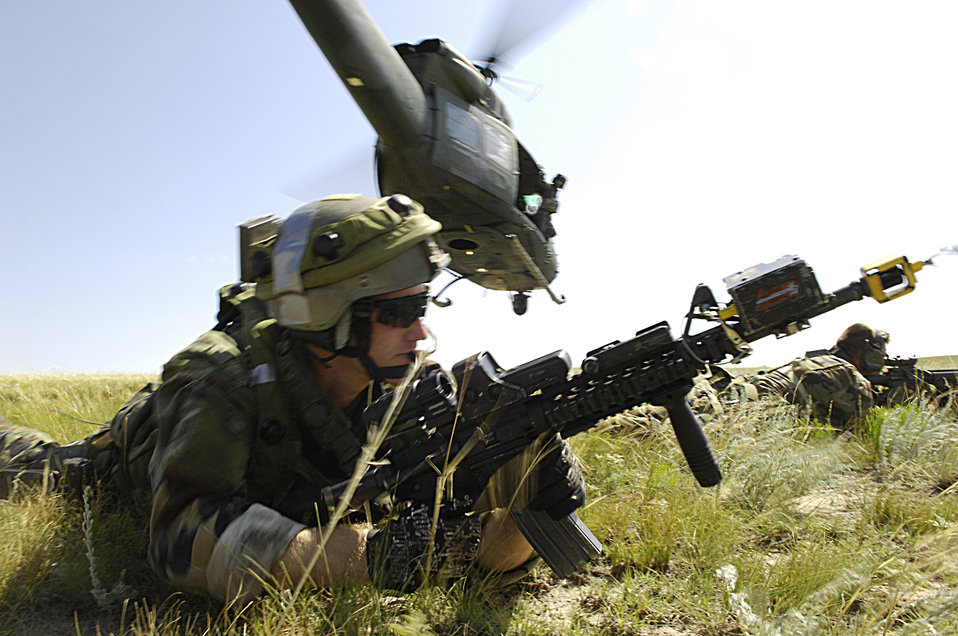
Missile security

Airmen prepare to engage with enemy targets as part of an exercise during Road Warrior VII July 17 at Camp Guernsey, Wyo. Students from the Tactical Response Force provided aerial and ground support using advanced tactics learned during a week-long class. Road Warrior is a joint training exercise between Air Force Space Command and the National Nuclear Security Agency's Office of Secure Transportation.